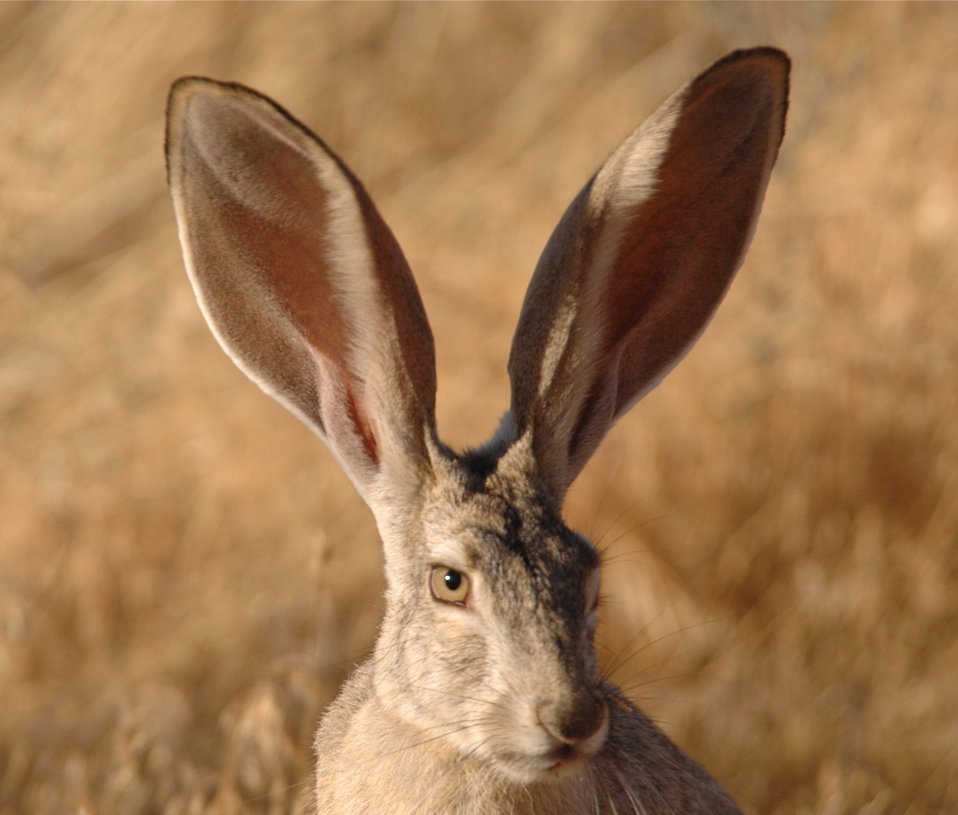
black-tailed jackrabbit

Bitter Creek National Wildlife Refuge, CA
Photo: USFWS

Note: Hopper Mountain and Bitter Creek National Wildlife Refuges were created as habitat for the critically endangered California condor. Captive-bred California condors are released there, and chicks have recently successfully fledged in the wild. Both refuges are closed to the public for the birds' protection, but condors can sometimes be seen from roads bordering the refuges. Contact refuge staff for more information about condors and other native CA species.